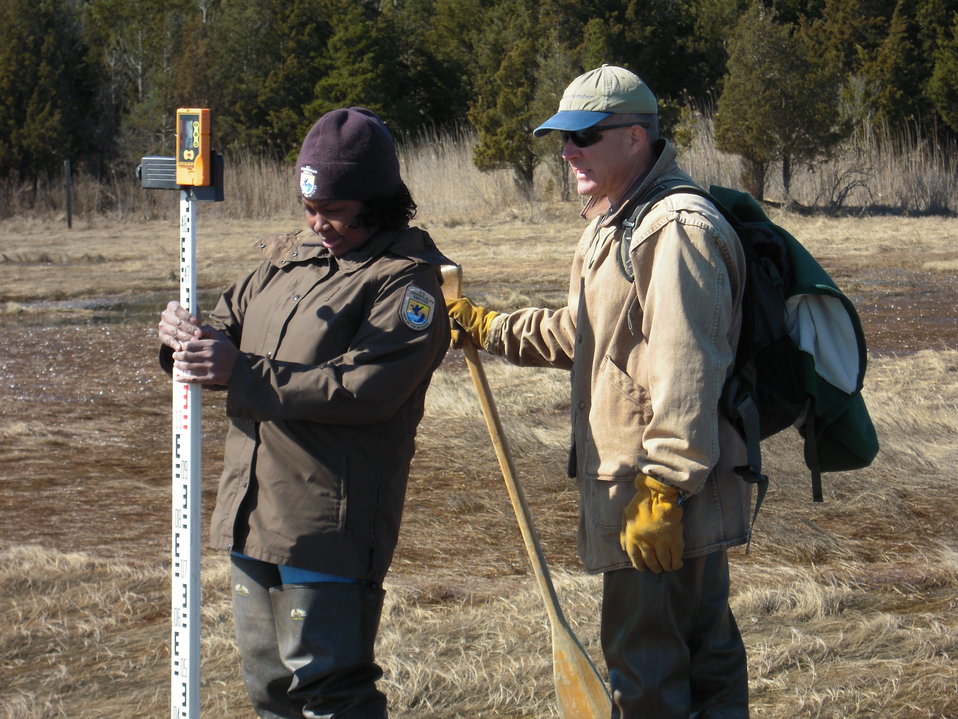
Salt Marsh field work